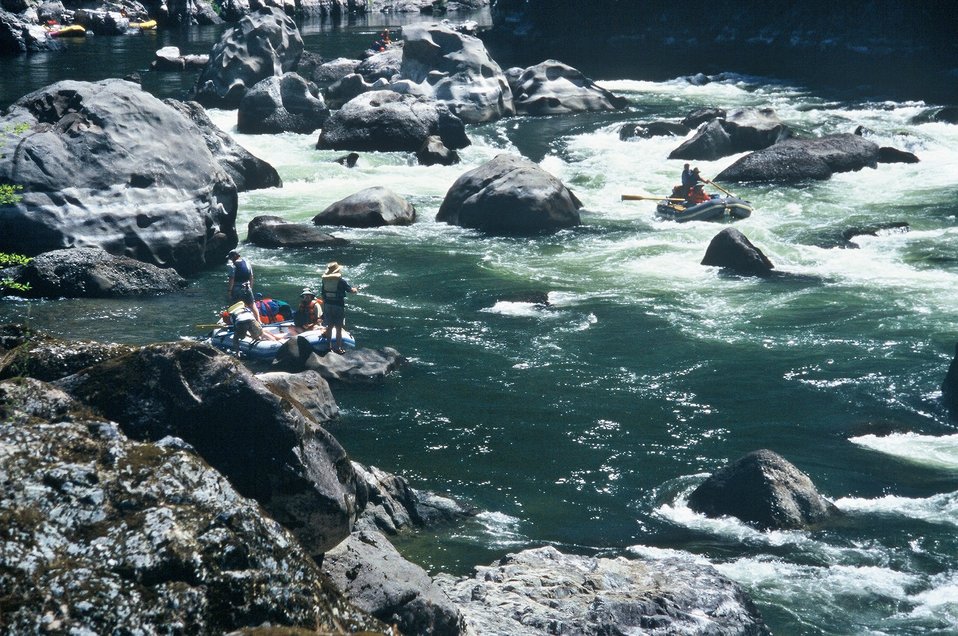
Blossom Rapids